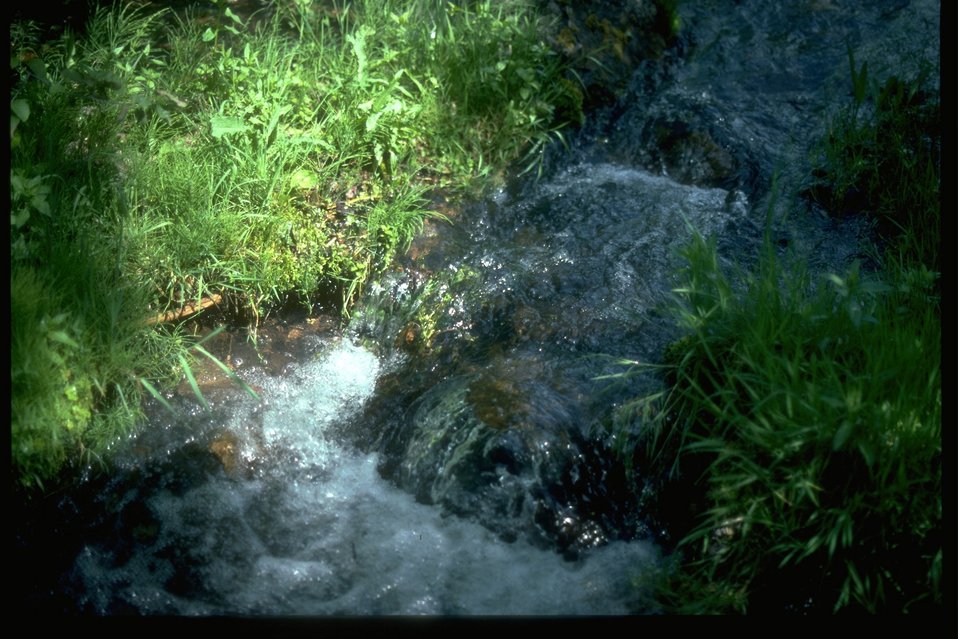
Stream at the north end of Steens.